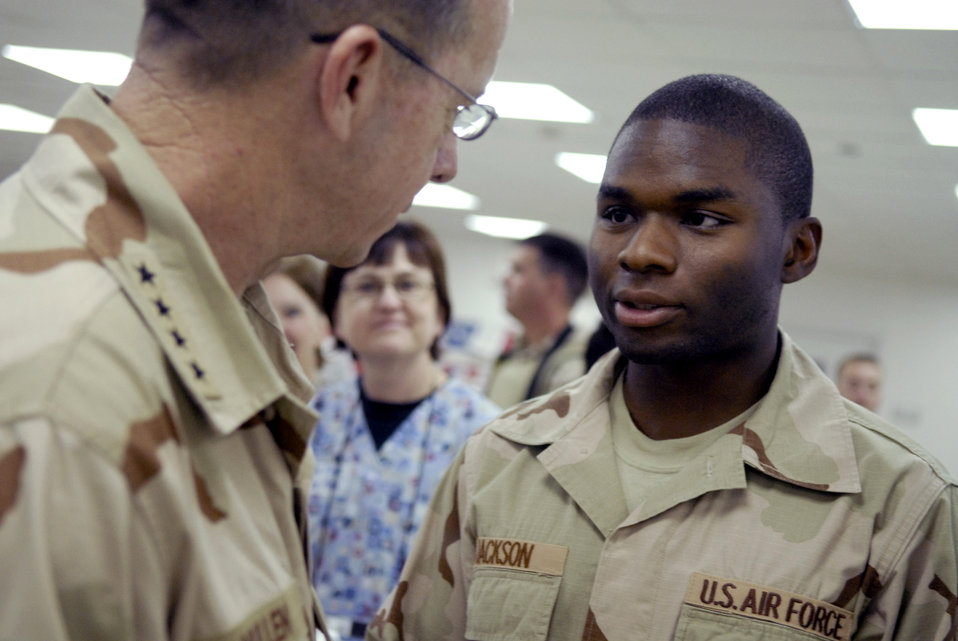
Chairman of the Joint Chiefs visits Air Force Theater Hospital

Senior Airman Dexter Jackson greets Navy Adm. Michael G. Mullen during the admiral's visit to Balad Air Base's Air Force Theater Hospital Oct. 4. Anmiral Mullen is the newly appointed chairman of the Joint Chiefs of Staff and Airman Jackson is assigned to the 332nd Expeditionary Medical Operational Squadron.